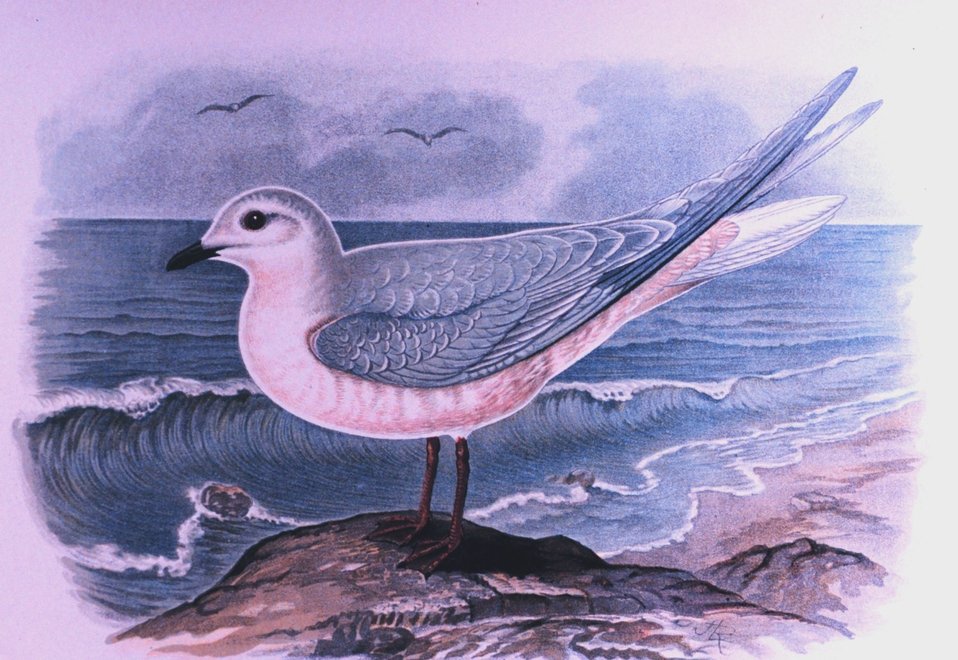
Rhodostethia rosea, male, adult in winter plumage. In: 'Report of the International Polar Expedition to Point Barrow ....' Expedition leader Lieutenant P. H. Ray. Published in 1885. Library Call Number Q115.I6 U6 1885.